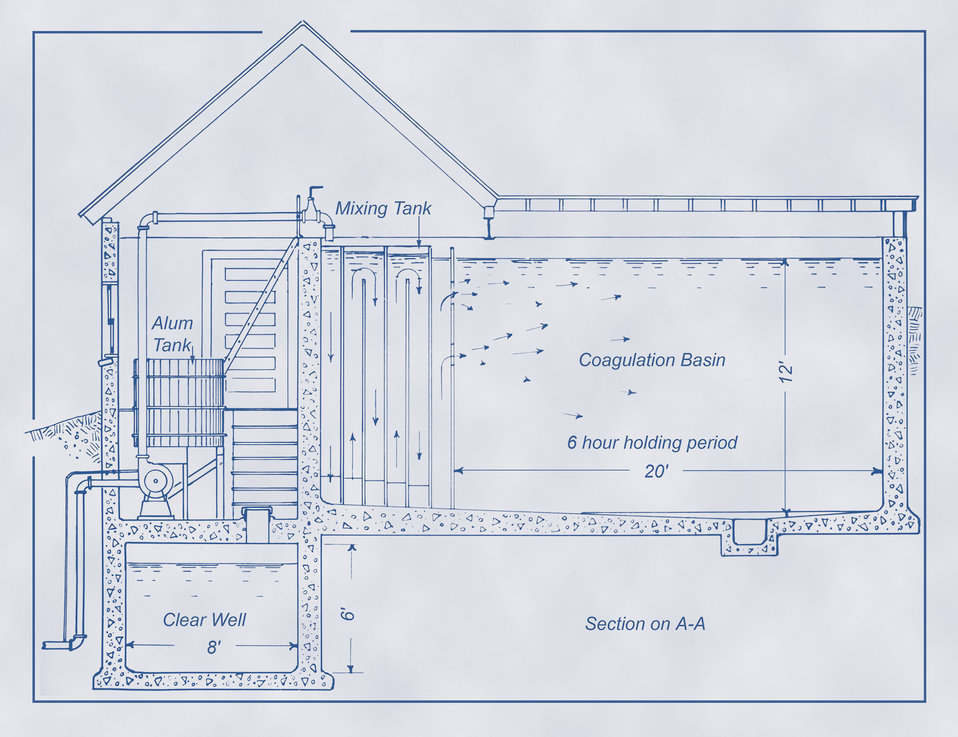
This historic 1922 diagram depicted a small municipal water filtration plant, which revealed the general configuration of the specific treatment units including the chemical dosing, mixing, coagulation, and storage tanks. This is a cross-section of the plant as seen from the side. Other views of this filtration plant can be seen in PHIL 8645, 8647, 8648, 8649 images.